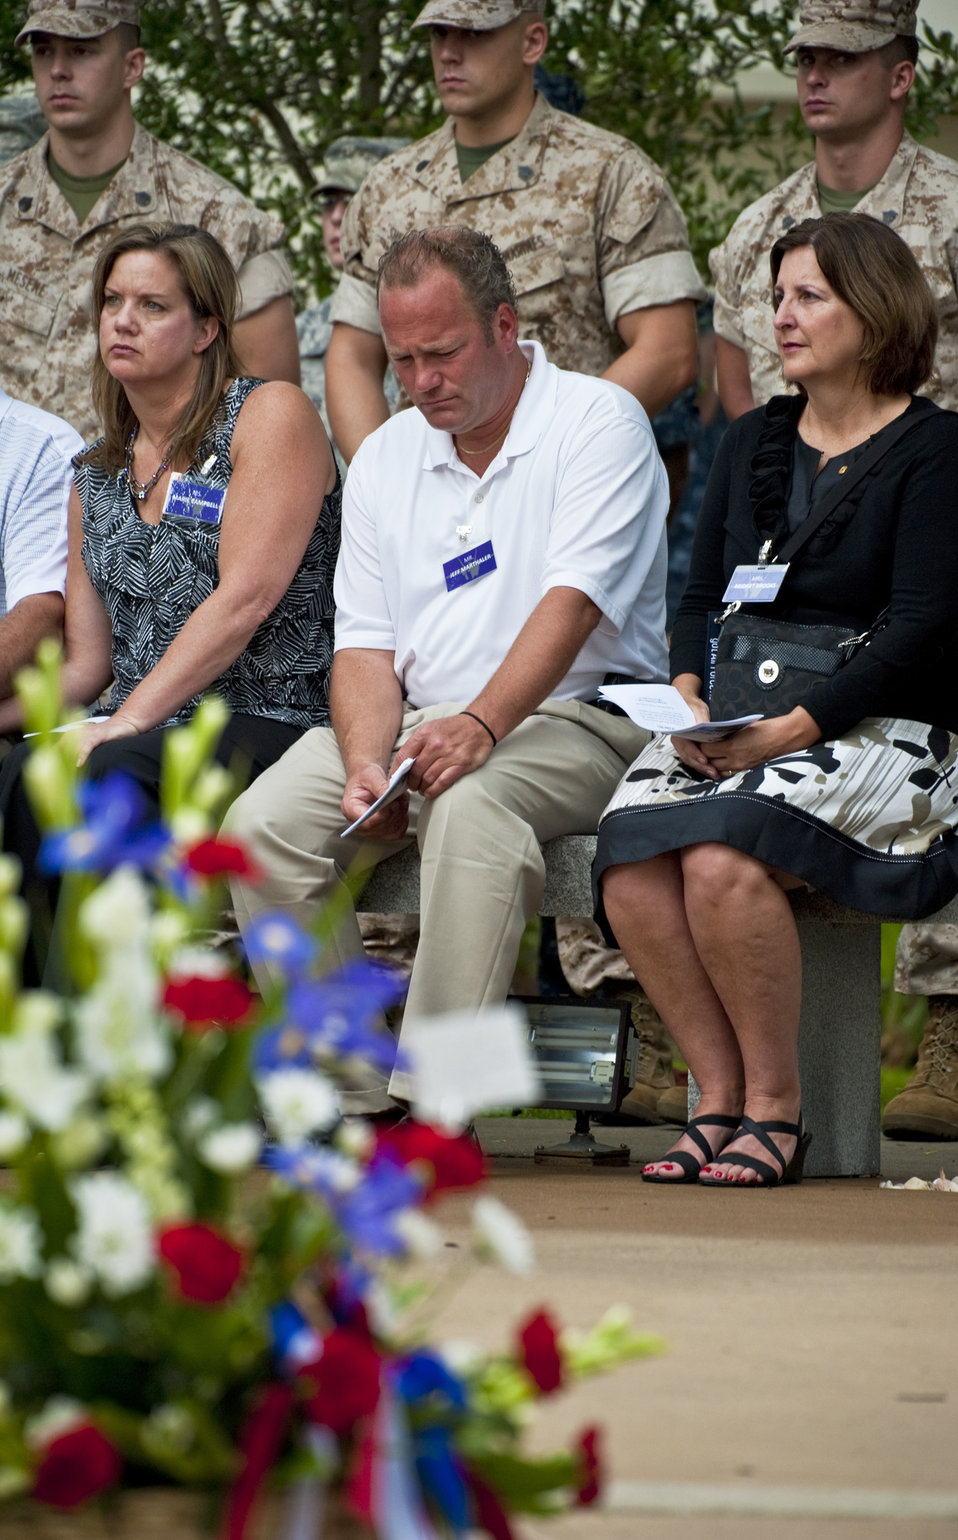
Khobar Towers memorial

Family members of victims of the Khobar Towers bombing observe a moment of silence at the Khobar Towers memorial ceremony June 24, 2011, at Eglin Air Force Base, Fla. June 25 marks the 15th anniversary of the bombing that killed 19 service members including 12 33rd FW Airmen.